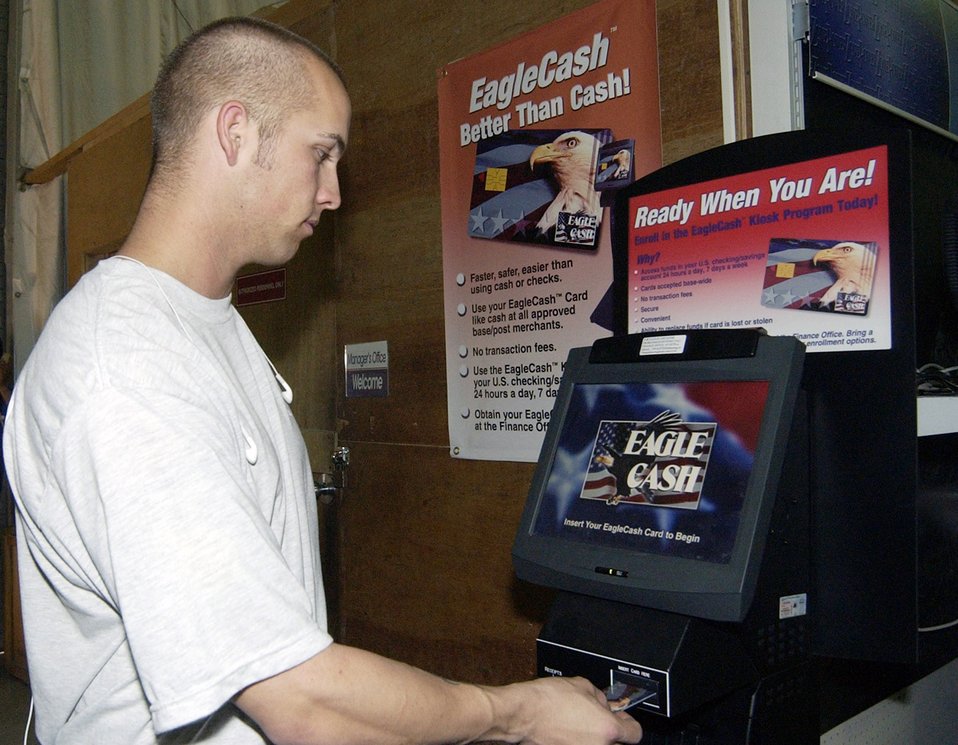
Eagle Cash lands at Air Force base

Senior Airman Mark Morris inserts his Eagle Cash card into the self-service kiosk to transfer money from his checking account to the card. A base in Southwest Asia stood up the Eagle Cash system so servicemembers in deployed locations can access their funds 24 hours a day, seven days a week.